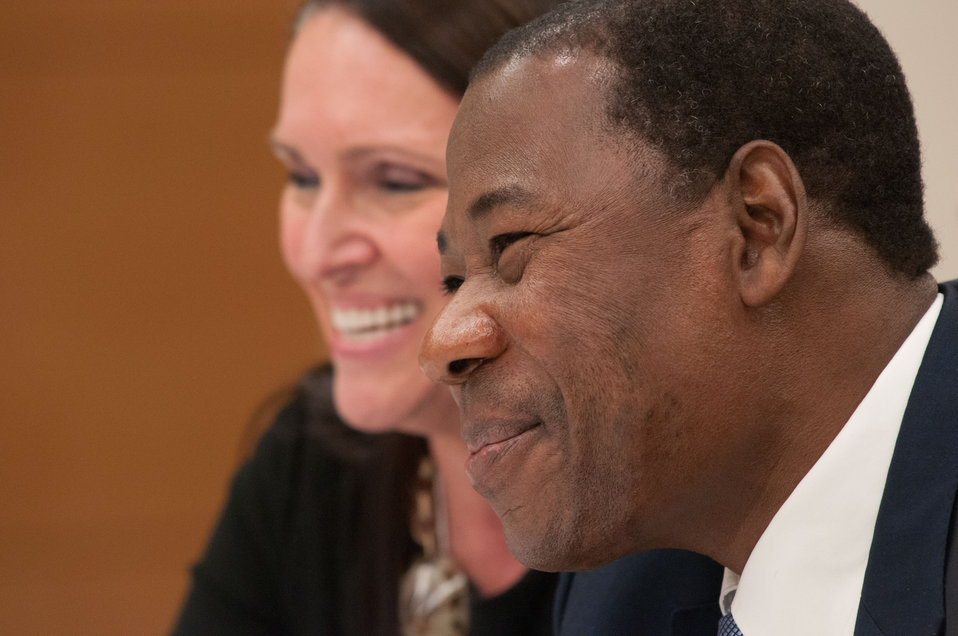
President of Benin His Excellency Dr. Boni Yayi makes remarks at the meeting of African Heads of State conference at the Ronald Reagan Federal Building in Washington, D.C., on Friday, May 18, 2012.